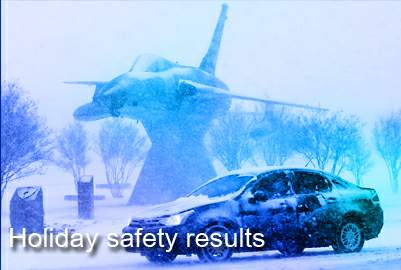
Air Force officials announce holiday safety results

The Air Force had the lowest recorded number of private motor vehicle fatalities during the Thanksgiving-to-New Year's time frame -- one -- to include the lowest number of automobile fatalities -- zero